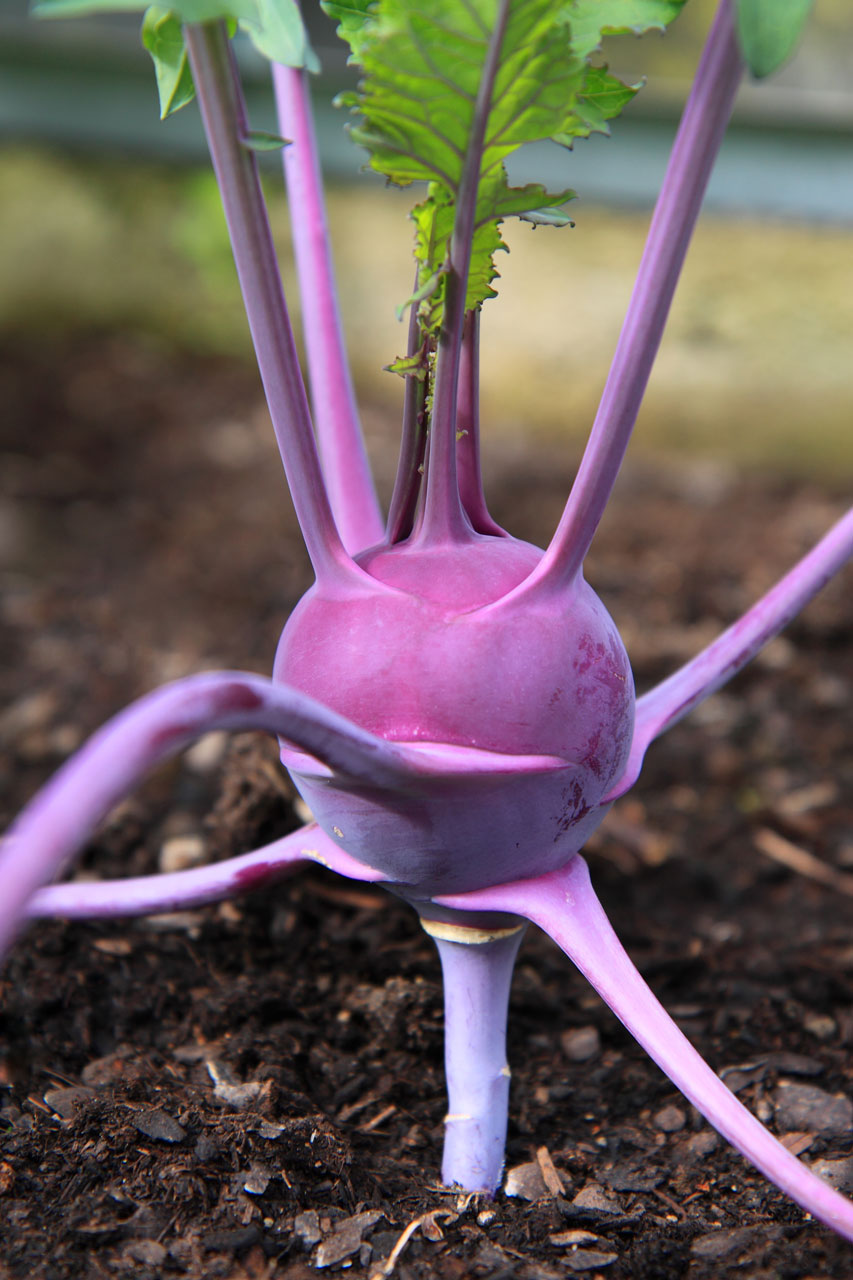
Kohlrabi

Growing kohlrabi.